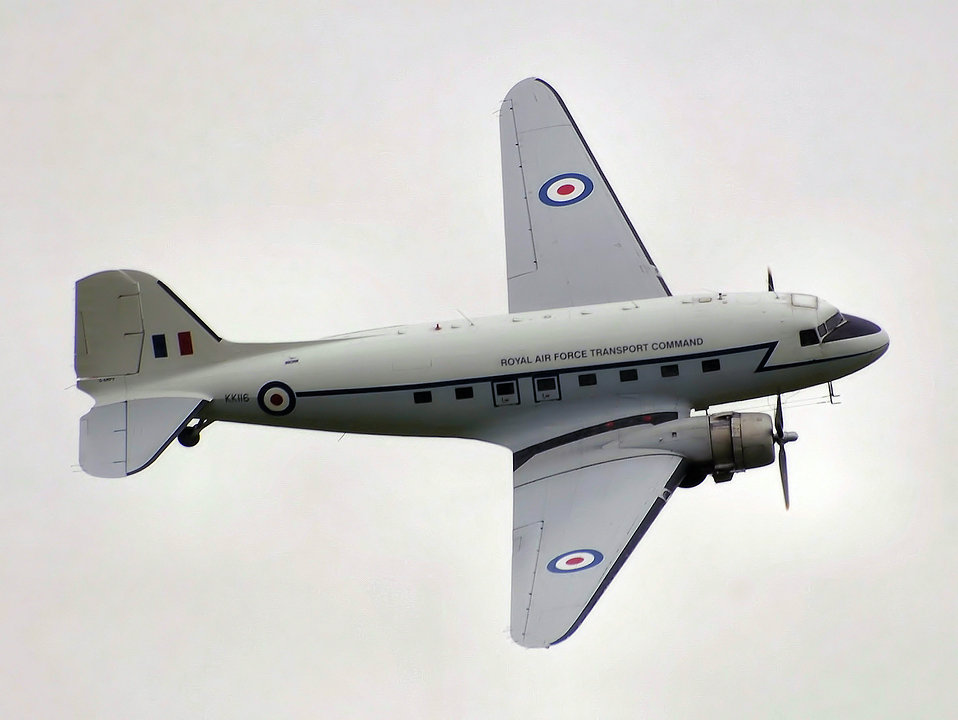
C-47b dakota g-ampy arp